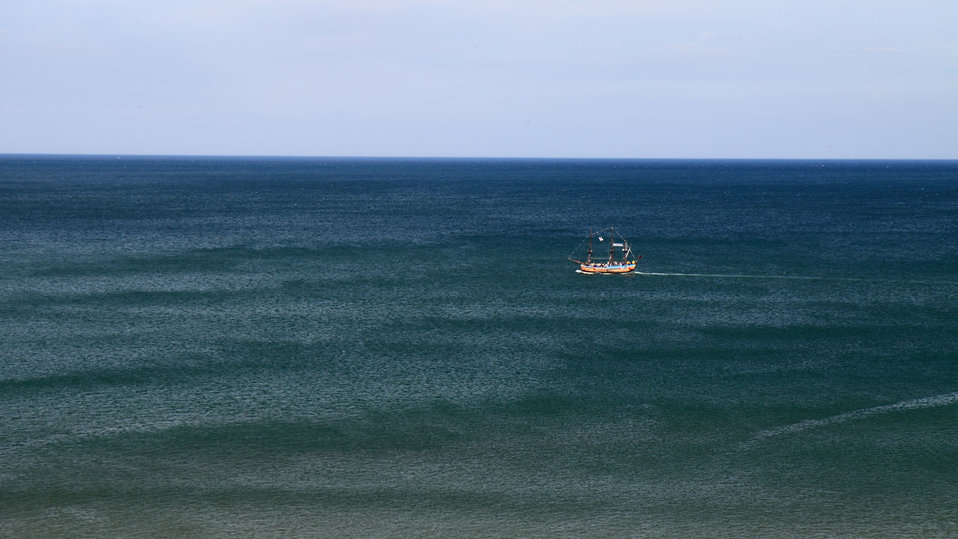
Sailboat in ocean.